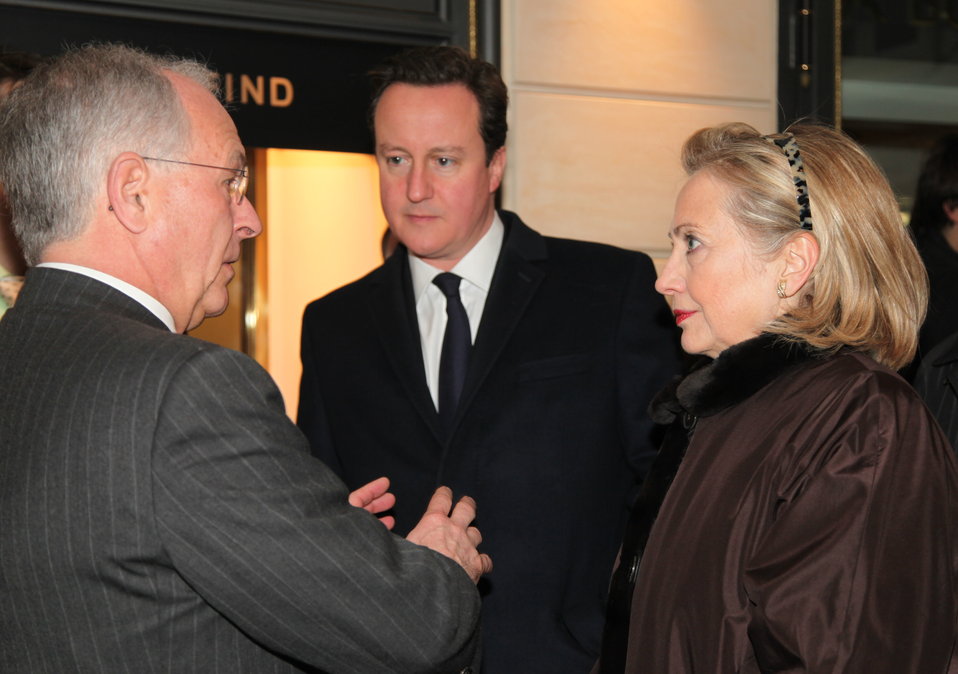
Secretary Clinton and British Prime Minister Cameron Are Welcomed to the Munich Conference By German Diplomat Ischinger

U.S. Secretary of State Hillary Rodham Clinton and British Prime Minister David Cameron are welcomed to the Munich Conference by host Wolfgang Ischinger in Munich, Germany, on February 5, 2011.